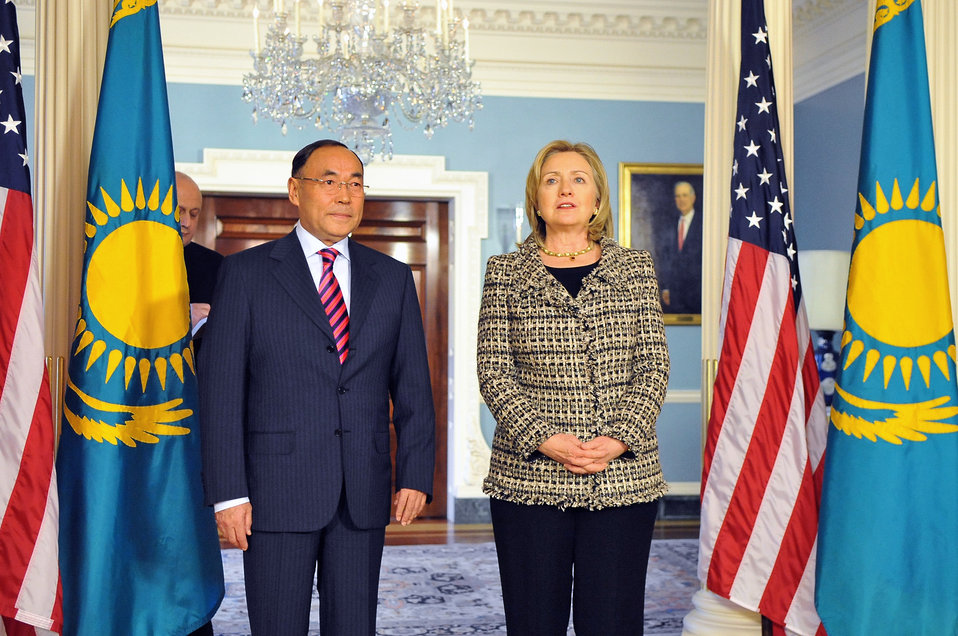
Secretary Clinton Meets With Kazakhstan Foreign Minister Saudabayev

U.S. Secretary of State Hillary Rodham Clinton meets with Kazakhstan Foreign Minister Kanat Saudabayev at the U.S. Department of State in Washington, D.C., on January 25, 2011.